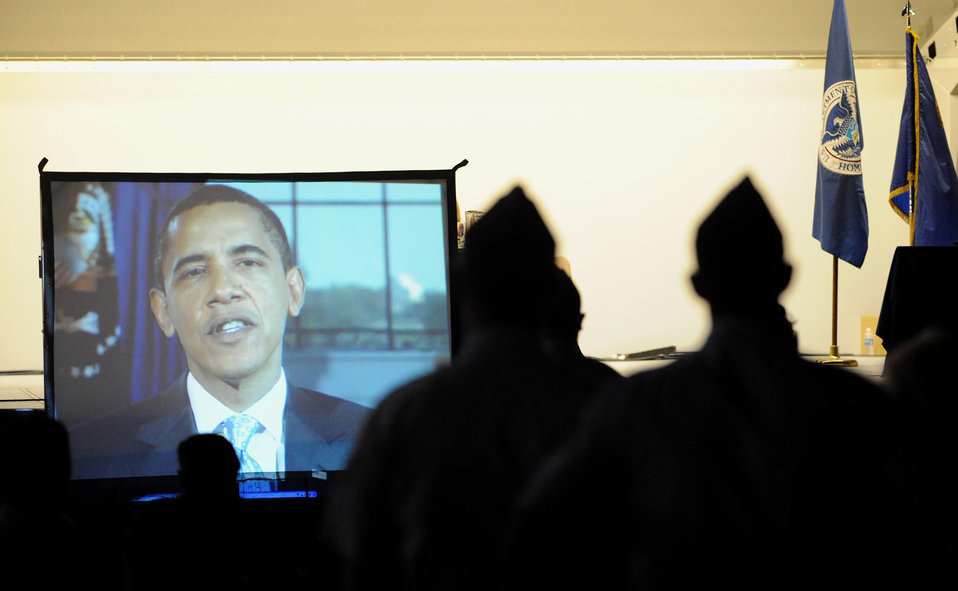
Nellis welcomes newest citizens during Freedom Fest

A videotaped message from President Barack Obama is played honoring the role and commitment of the newly sworn in servicemembers during the naturalization ceremony at the Freedom Fest Fourth of July celebration in Nellis Air Force Base, Nev.